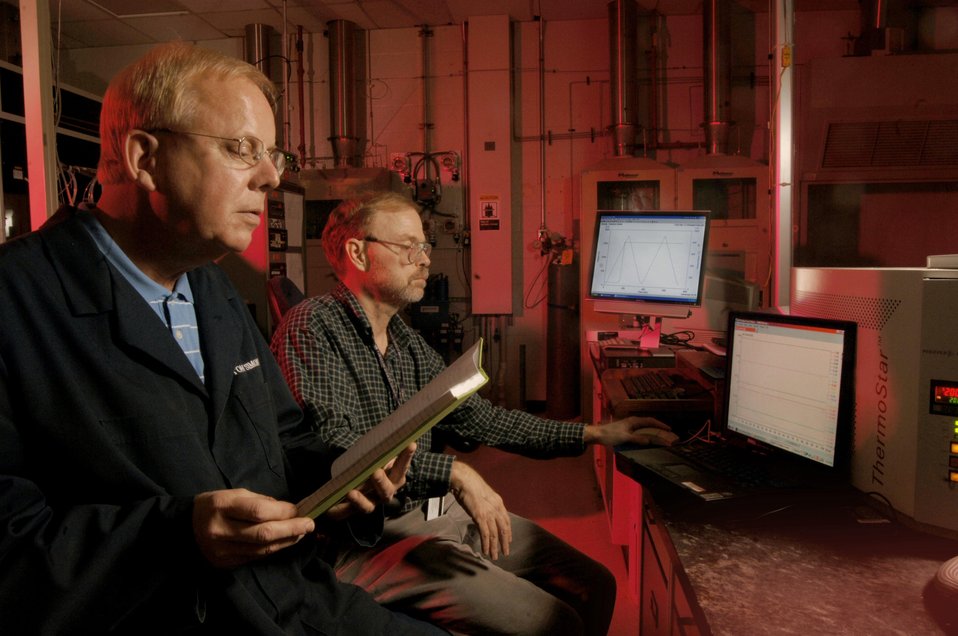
At NETL, Thomas Simonyi, left and Stephen Beer use a thermogravimetric analyzer to analyze heavy metals to determine their suitability for making thin-film sensors for natural gas.

NETL is teaming with Carnegie Mellon University and West Virginia University to develop sensor arrays that can respond to rapid changes in fuels gas composition. The ability to detect and respond to changes is increasingly important because of the anticipated increased usage of liquefied natural gas in the nation's pipeline of the system. The technique for sensing hydrocarbons such as methane (C1), ethane (C2) and propane (C3) involves characterize their crackling behavior over catalyst materials. The technique developed by NETL researchers differentiates the activity of platinum catalysts with C1-C3 gases from thermal cracking.